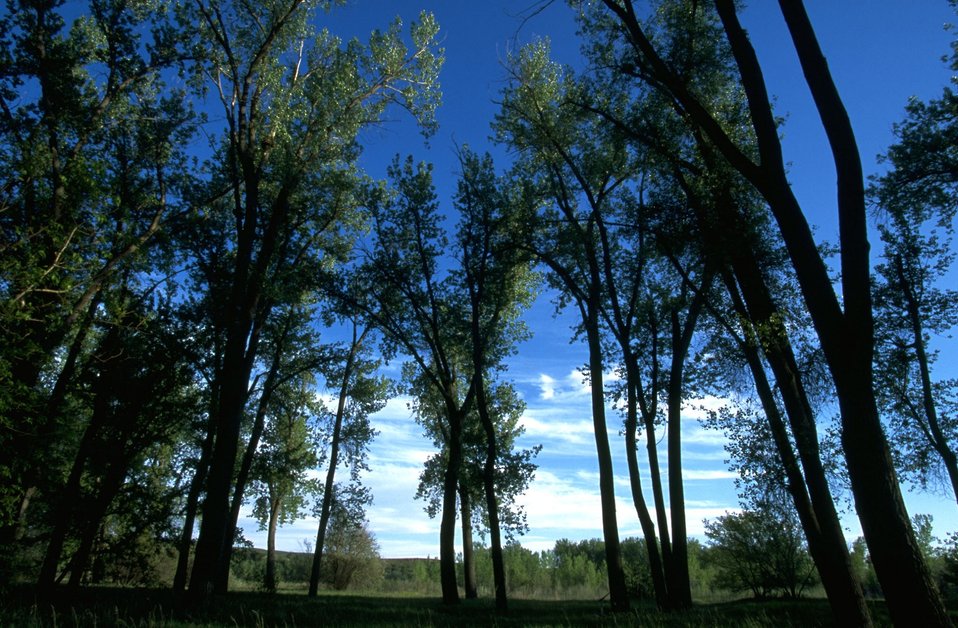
Cottonwood Trees against a blue sky in the Sundance Lodge Recreation Area